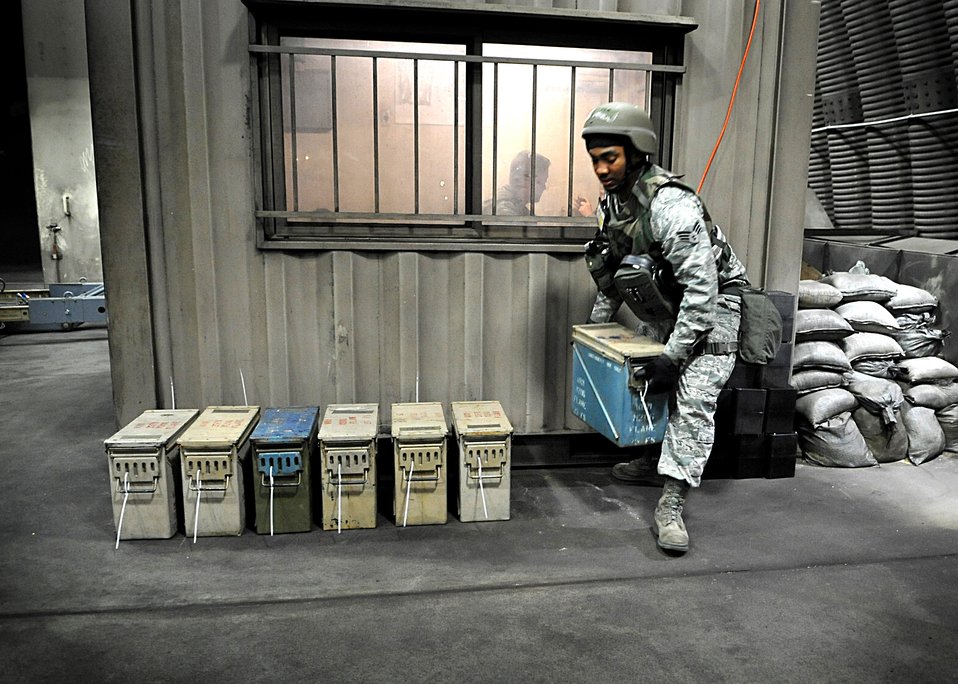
A flare for readiness

Senior Airman Kevin Benberry carries a box of flares April 4, 2011, at Osan Air Base, South Korea, in preparation for a Pacific Air Forces Command operational readiness inspection. Airman Benberry is assigned to the 51st Maintenance Operations Squadron.